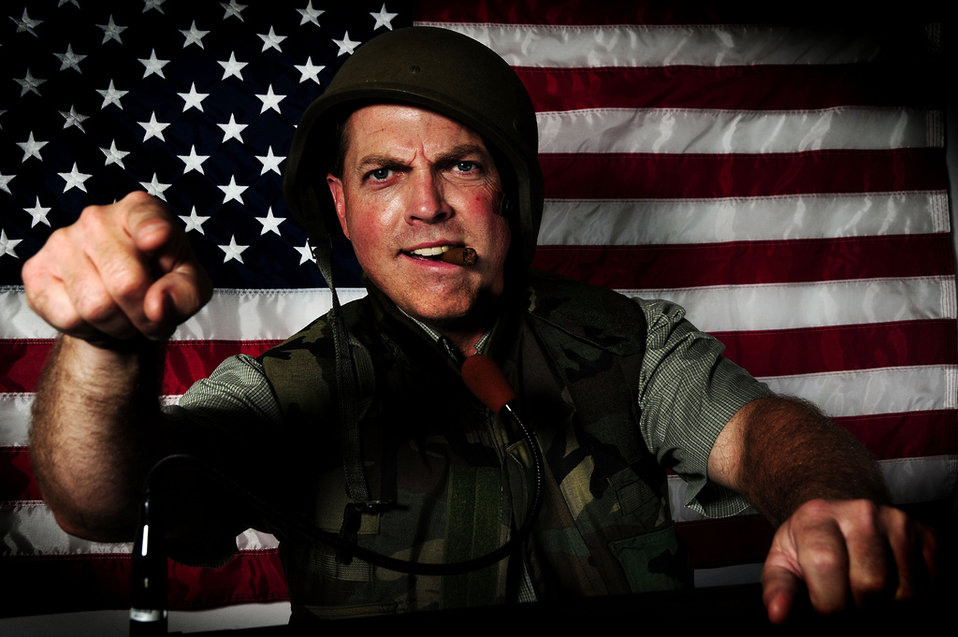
Pioneers in Blue

Master Sgt. Brian Jones is a veteran who served 22 years in public affairs and the supply career field as an inventory management specialist. Sergeant Jones is featured in